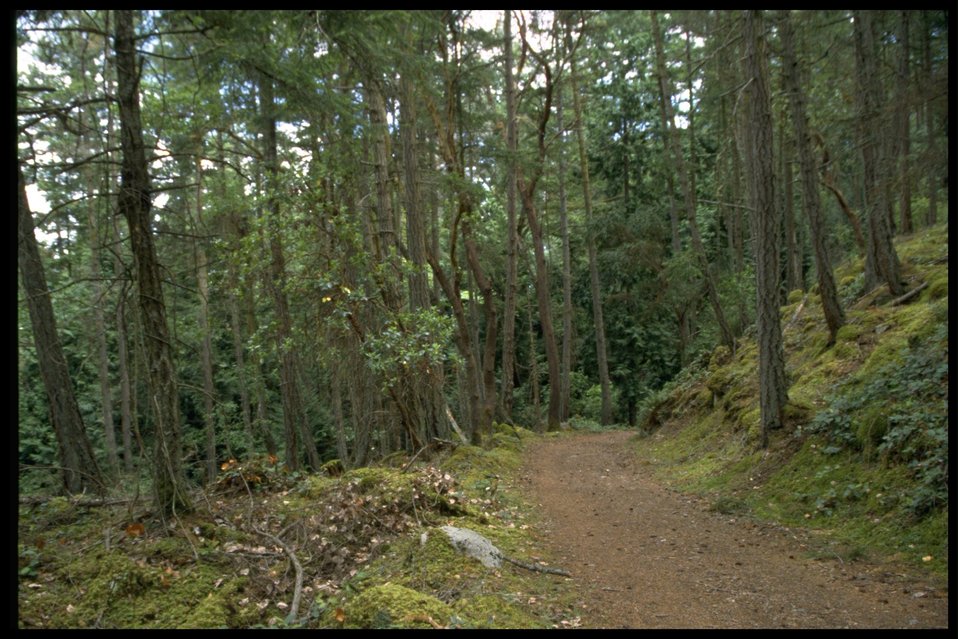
Path leading up to view point at Turn Point.